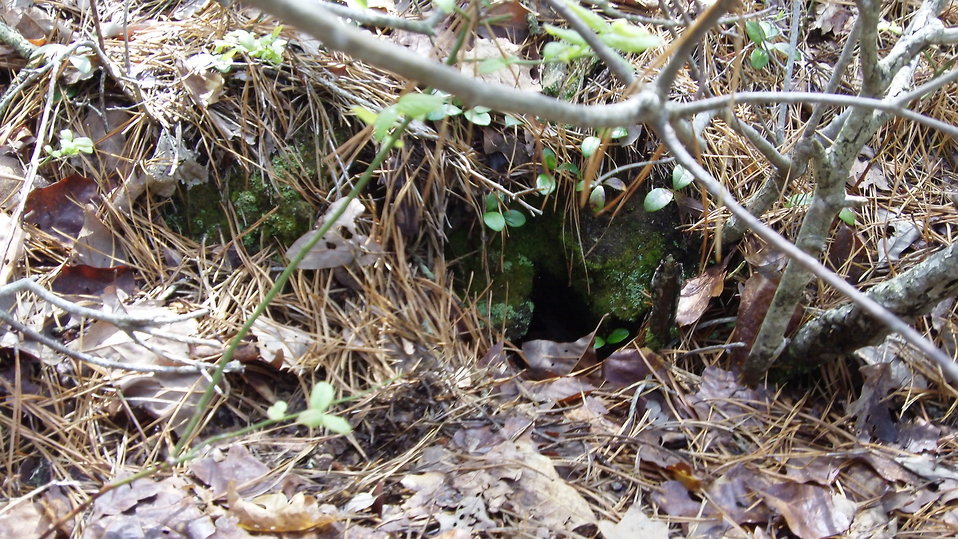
New England cottontail burrow

This burrow is at Camp Edwards on the Mass Military Reservation, which is home to New England cottontails.